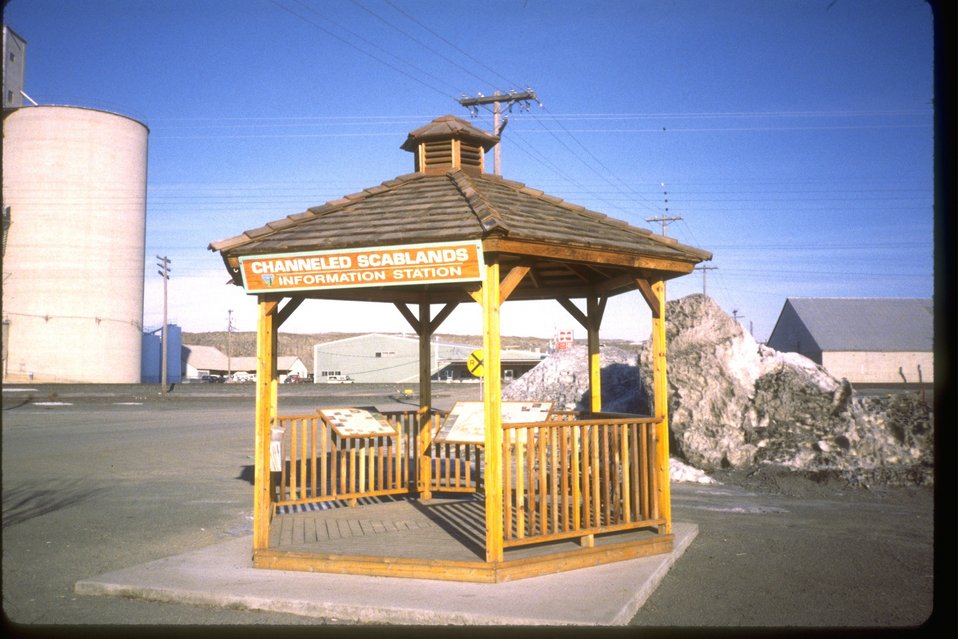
Interpretive kiosk in Odessa, Washington